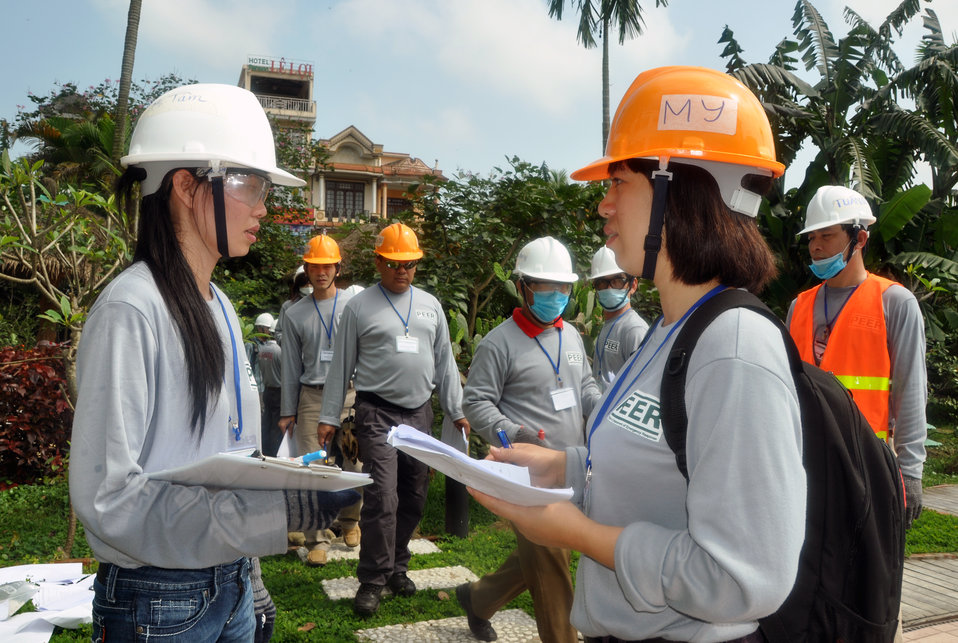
Disaster and Emergency Training Funded by USAID in Hue, Vietnam